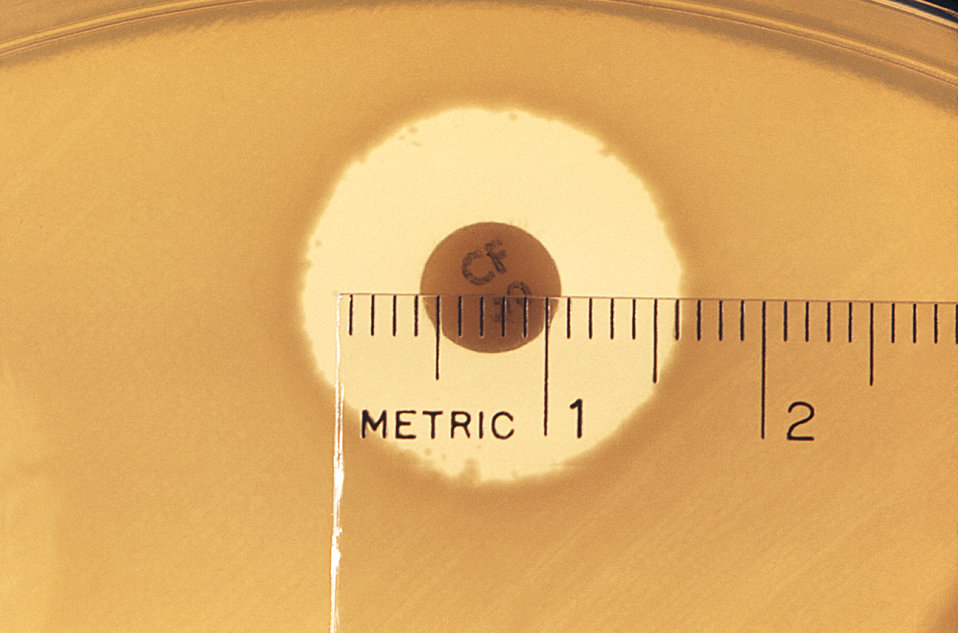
This 1972 image depicted a Mueller-Hinton agar culture plate that had been used in an antibiotic susceptibility test (AST). Known as the Kirby-Bauer method, each of the small labeled discs, or wafers, contained an antibiotic cocktail. The light halos surrounding each disc, also known as 'reaction zones', represented regions in which the bacteria on the agar's surface did not thrive, due to their sensitivity to the antibiotic that had been soaked into these respective discs. This image is an enlarged view of a section of PHIL 10784.